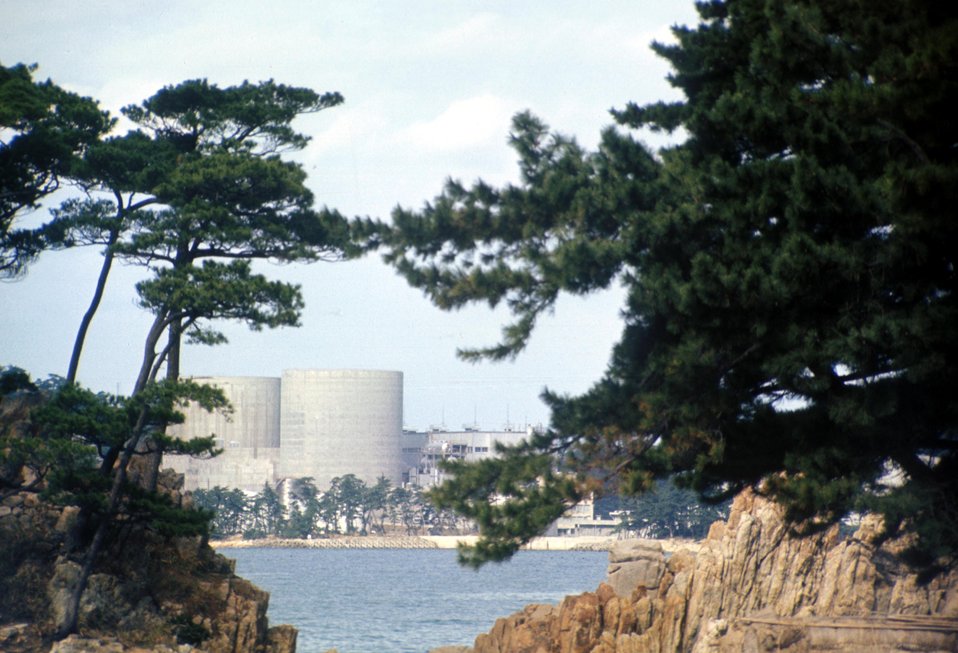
Kansai Plant #1, Mihama, Japan. Kansai Nuclear Reactor.